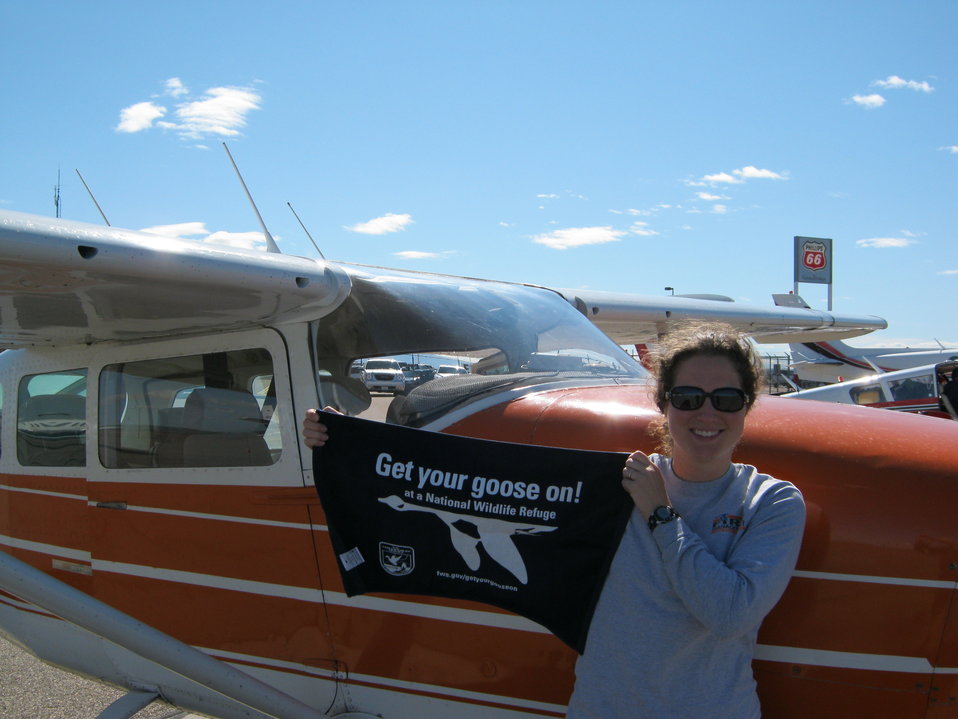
Get Your Goose On!

The goose takes flight at Benton Lake National Wildlife Refuge